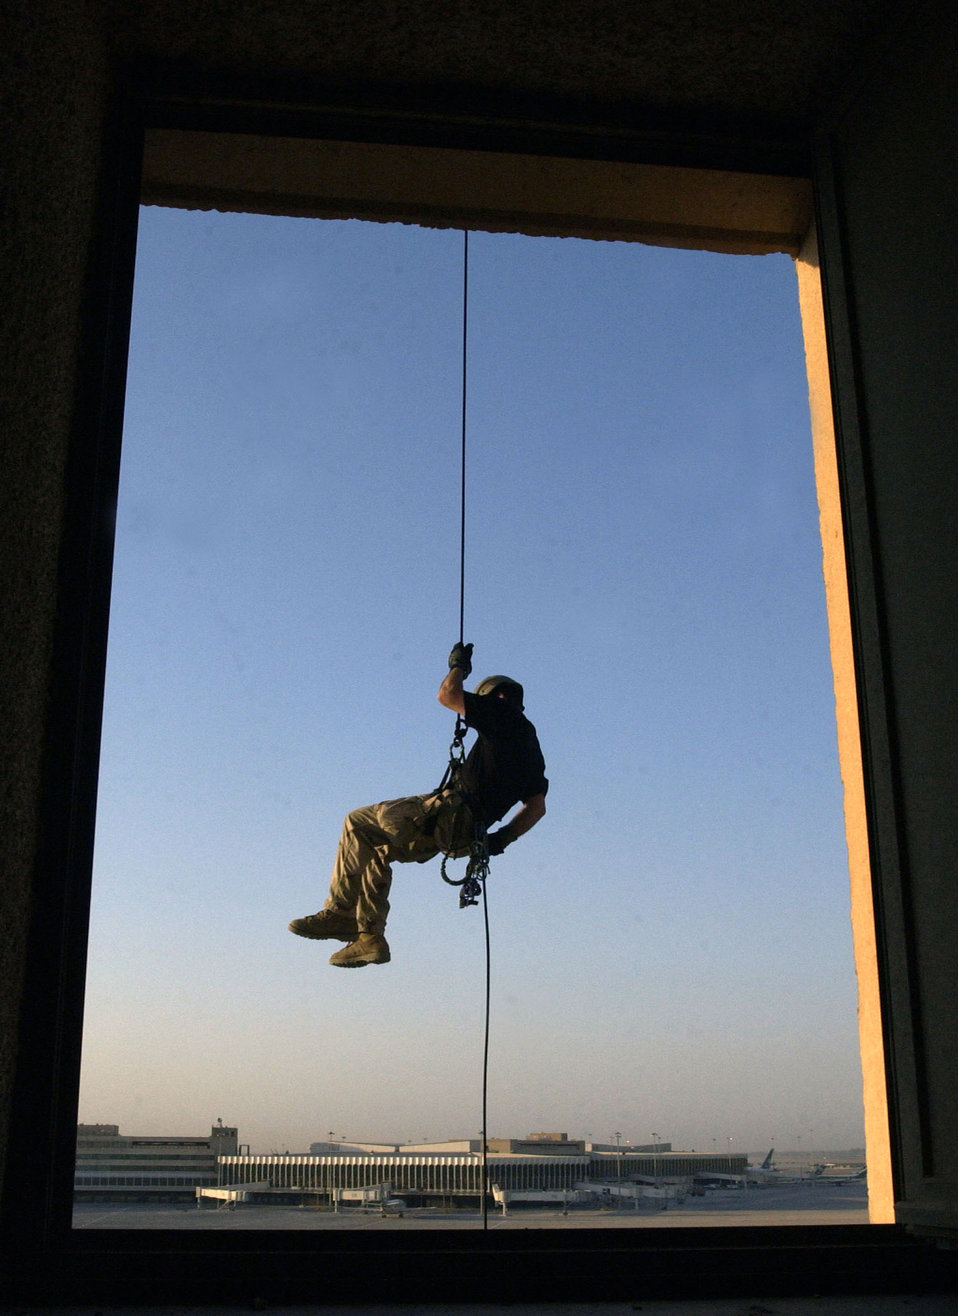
A different kind of air traffic

OPERATION IRAQI FREEDOM -- An Air Force Reserve pararescueman assigned to the 304th Rescue Squadron, Portland International Airport, rappels from the Baghdad International Airport air traffic control tower during an exercise. Members of the 304th RS are deployed here supporting Operation Iraqi Freedom.